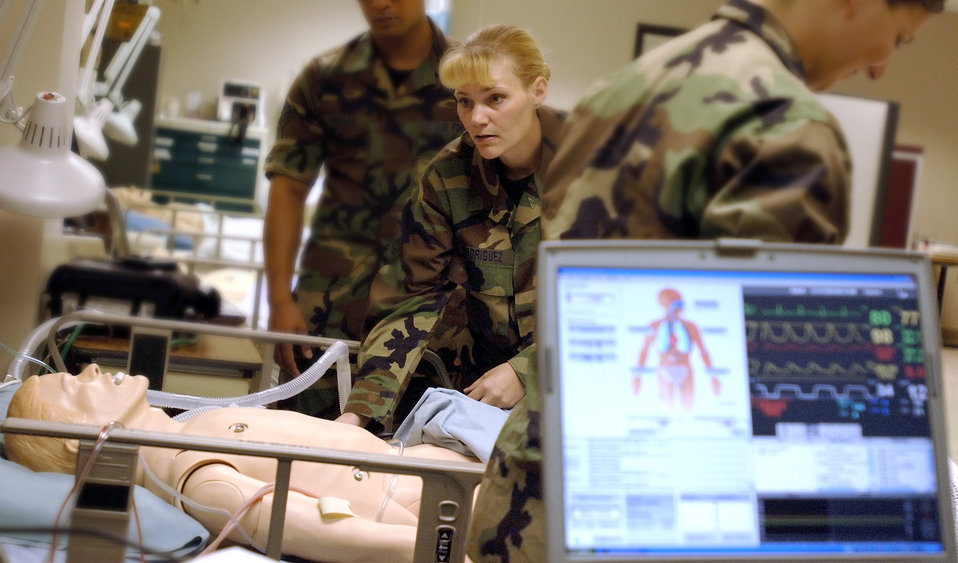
'New' patients make training more realistic

Senior Airman Jamie Rodriguez diagnoses a simulated patient during technical training on Friday, July 21, at Sheppard Air Force Base, Texas. The simulated patient is one of seven new advanced medical tools used to help Air Force medical technical training students receive realistic instruction.